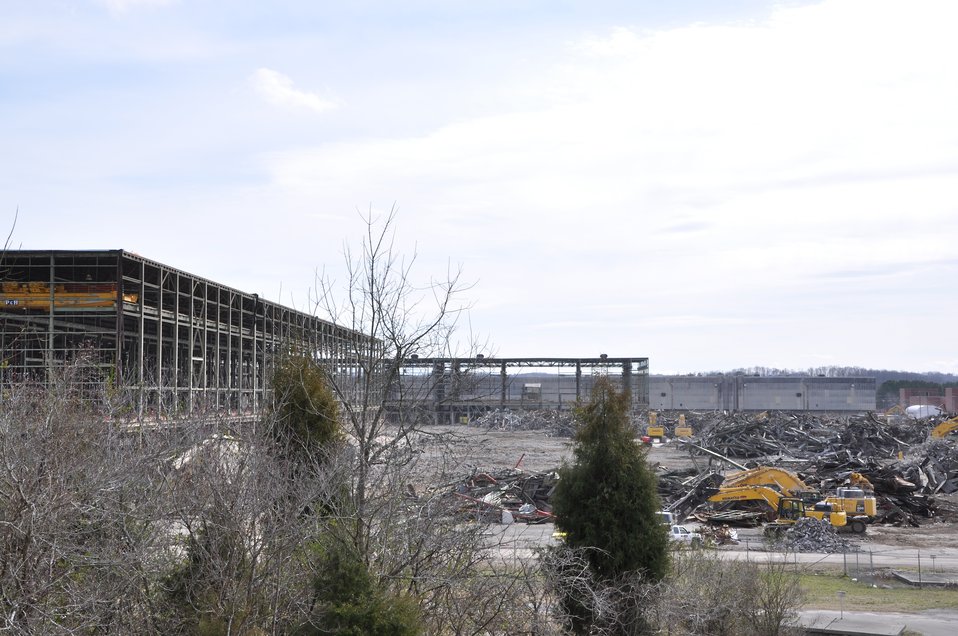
Oak Ridge demolition - K-33

Earlier this year at the East Tennessee Technology Park, workers demolished the Building K-33, which measured 1.4 million square feet.